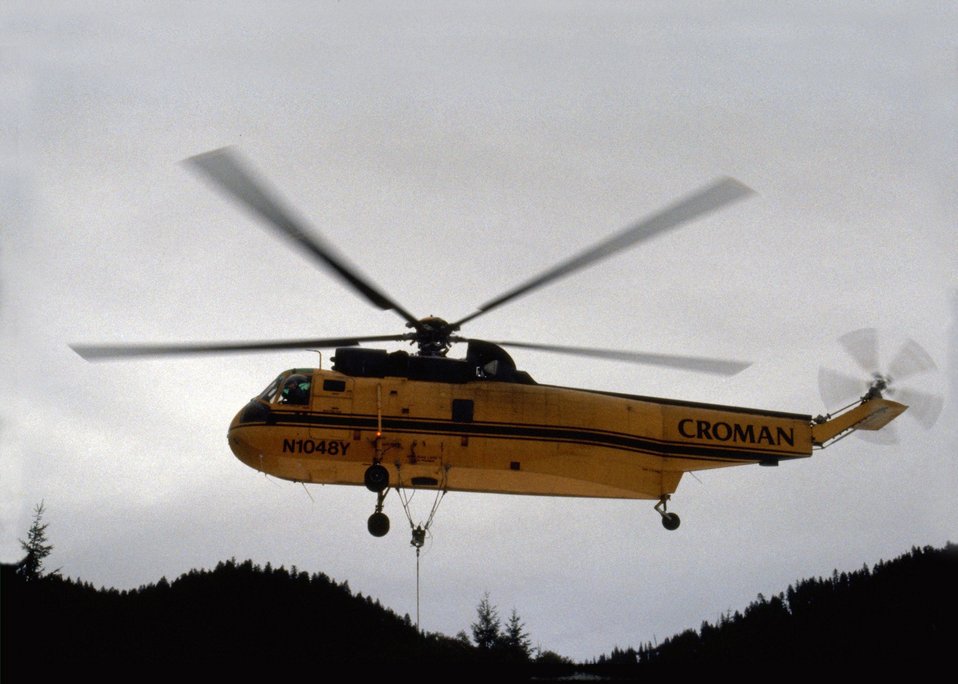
Croman Company (lumber) helicopter